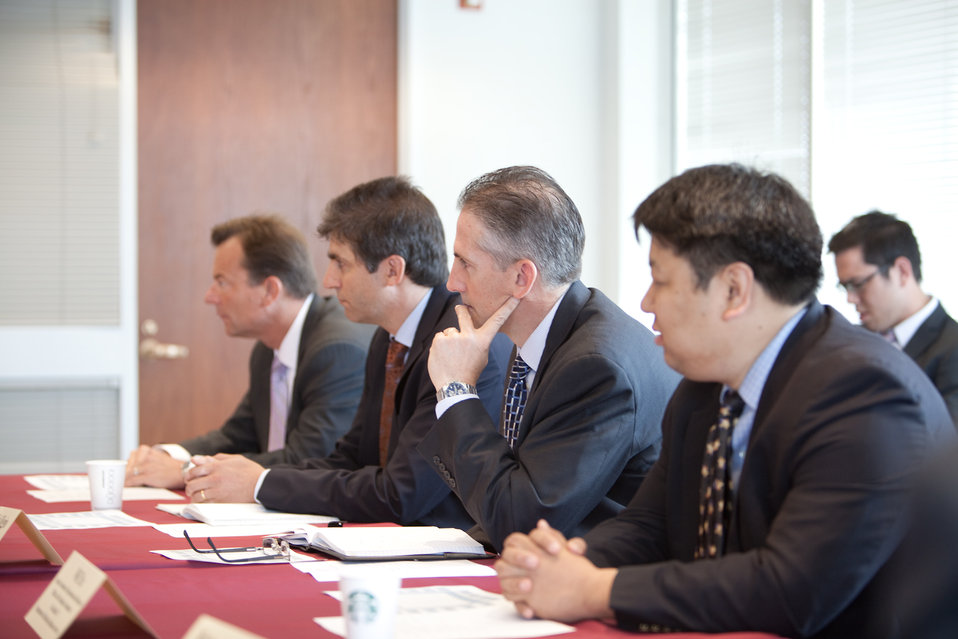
mHealth Attendees Listening to FCC Chairman While He Speaks

Members from the health industry attendees listening to FCC Chairman speak about mHealth. Andy Sallee of MedApps, Doug Trauner (Founder) of TheCarrot, Dale Wiggins(Vice President of Technology) of Philips Healthcare and Wil Yu (Special Assistant of Innovations and Research) of ONC.

June 6, 2012 - FCC Headquaters | Washington, DC